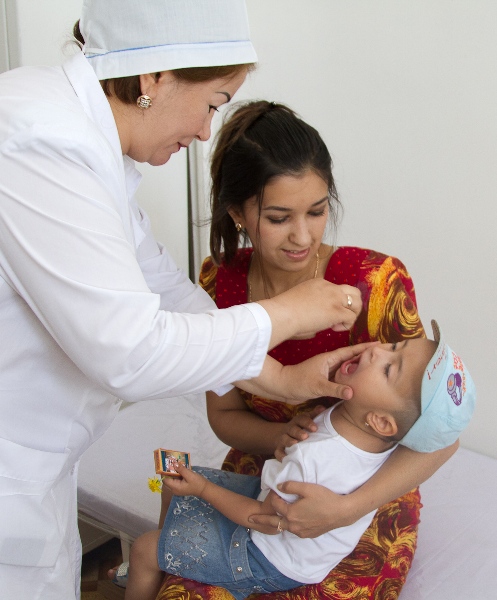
A Tajik child receives the polio vaccine at a health clinic funded by USAID in Dushanbe, Tajikistan, on May 23, 2011. USAID is supporting a national polio vaccination campaign aimed at preventing future outbreaks of the disease.